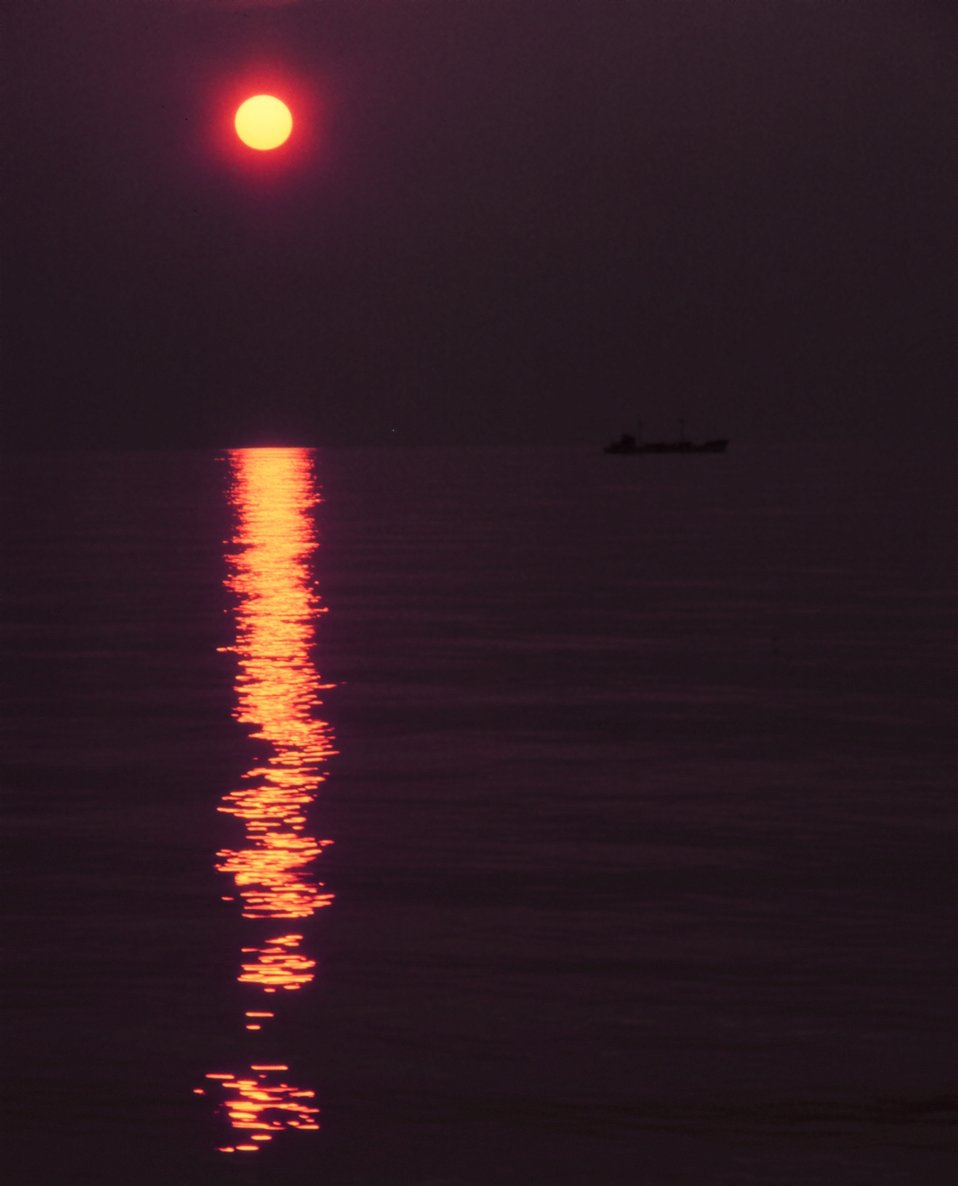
A small coastal freighter plying its way through a placid sea at sunset.